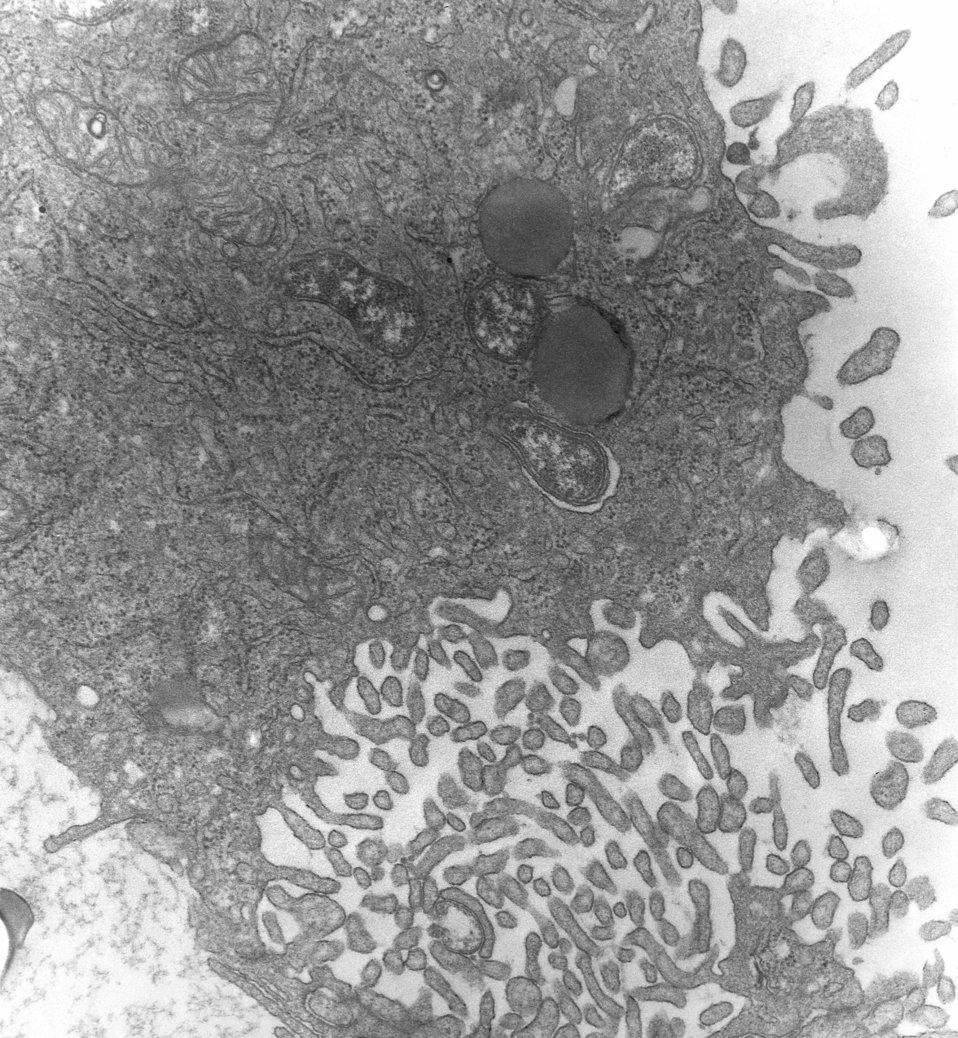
This 1976 transmission electron micrograph (TEM) depicted a hypertrophic peritoneal mesothelial cell of mouse that had been experimentally infected intraperitoneally with Orientia tsutsugamushi rickettsial micro-organisms. In this TEM, several organisms were visible, free within the host cell's cytoplasm. One O. tsutsugamushi appeared within a phagocytic vacuole, still bearing a third outer membrane layer of probable host cell origin.